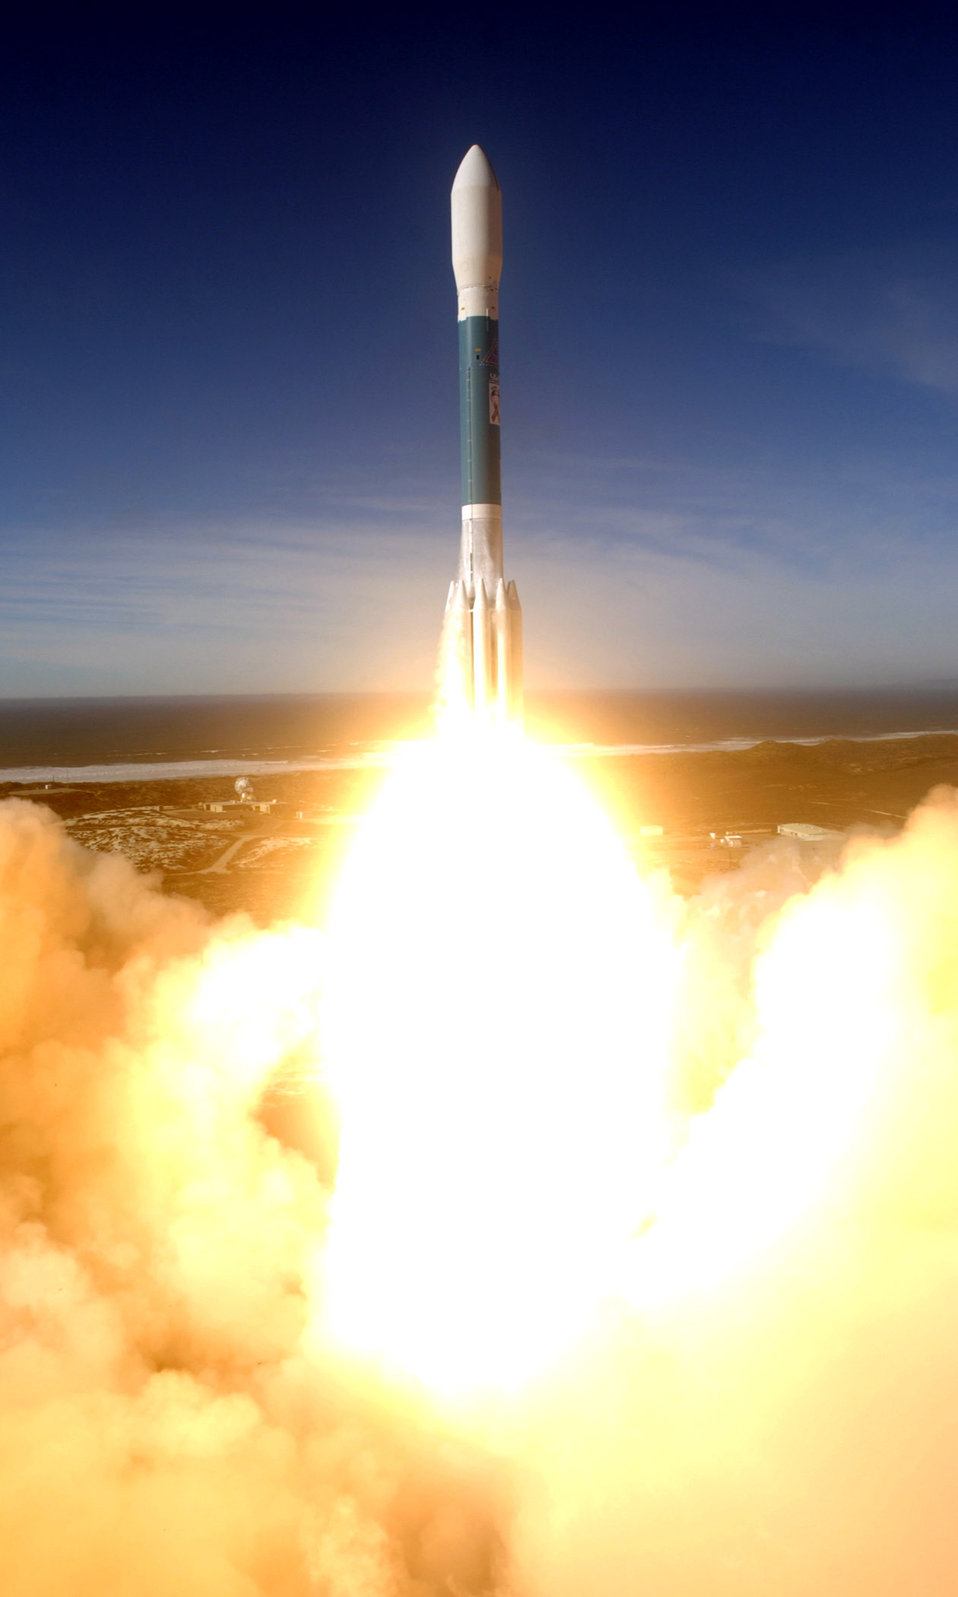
Vandenberg successfully launches Delta II

A Delta II rocket carrying a National Reconnaissance Office satellite successfully launches Dec. 14 from Space Launch Complex-2 at Vandenberg Air Force Base, Calif.